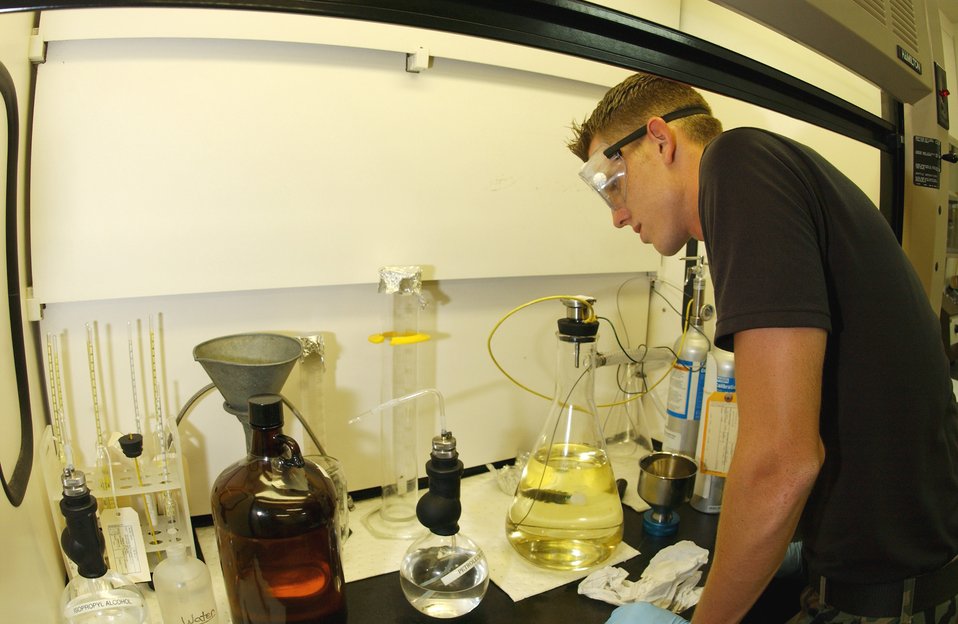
Fuels laboratory

Senior Airman Jeff Simmons ensures quality fuel is distributed to aircraft by testing for impurities in JP-8 jet fuel Monday, March 20, 2006, at MacDill Air Force Base, Fla. Airman Simmons runs sample tests to ensure fuels are in compliance with Air Force standards and have no additives that could damage an aircraft. Airman Simmons is a fuels lab technician with the 6th Logistics Readiness Squadron.